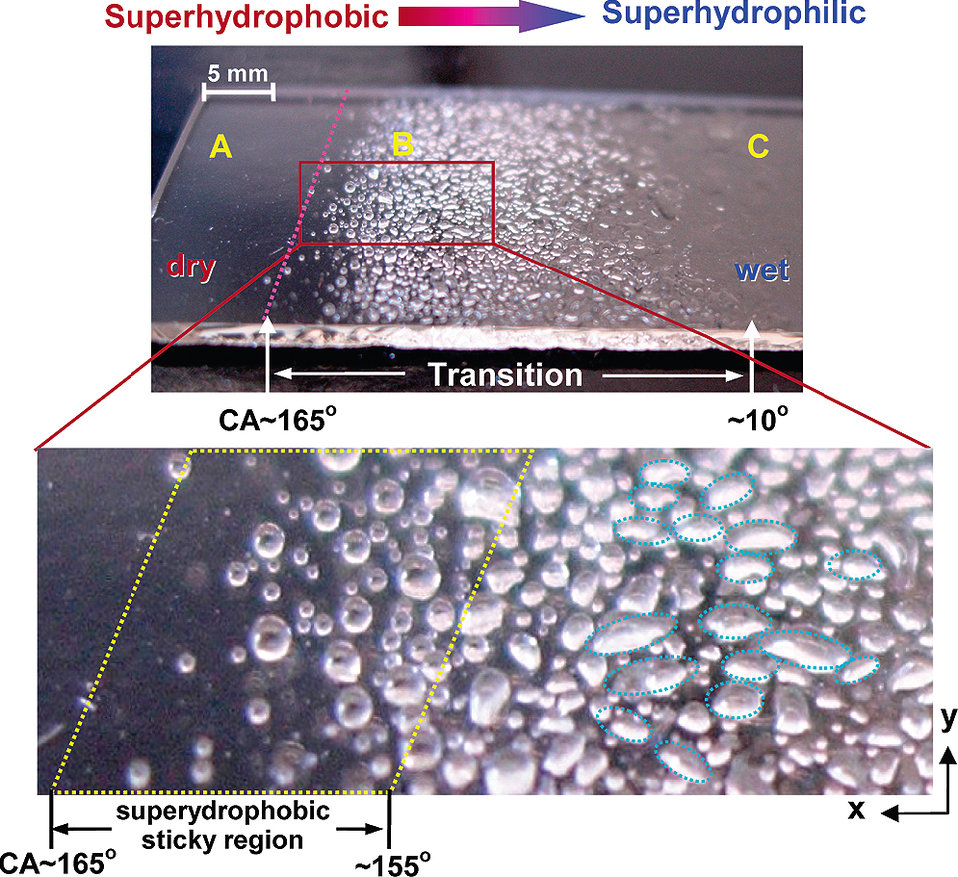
Surface Adhesion; Wetability gradient

Wetability gradient: Water sprayed on a glass slide coated with a nanostructured gradient wettability film using the new NIST technique illustrates the transition from (A) superhydrophobicity to (C) superhydrophilicity. The lower image shows the magnified image of the (A) hydrophobic to (B) transition wetting region. The pink dotted line indicates the border of the superhydrophobic region, and the yellow dotted region shows a hydrophobic 'sticky' region.